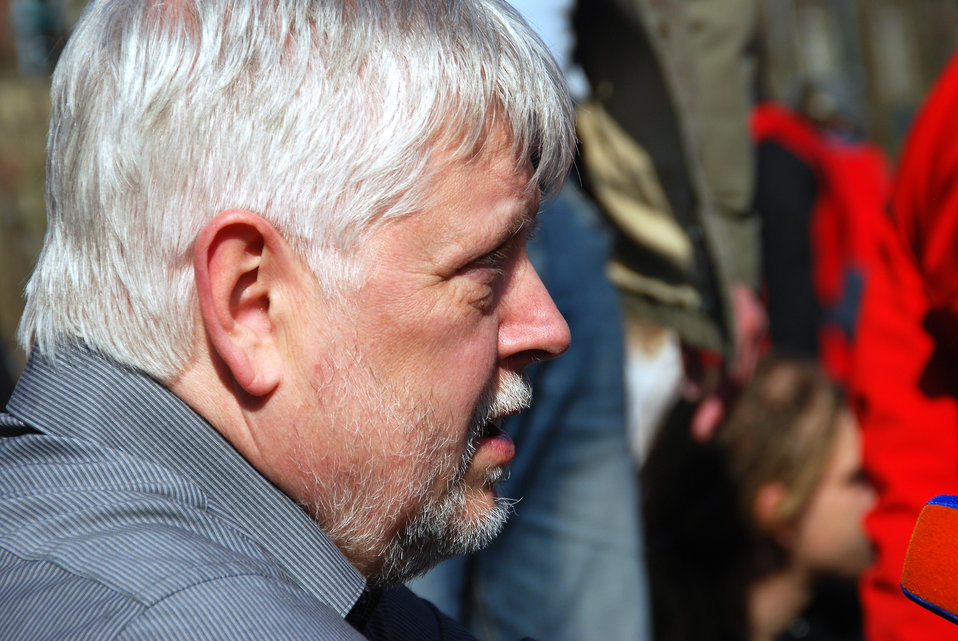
Proteste gegen den Nazi-Aufmarsch am 24.3.2012 in Frankfurt (Oder), mit Helmuth Markov, Finanzminister des Landes Brandenburg